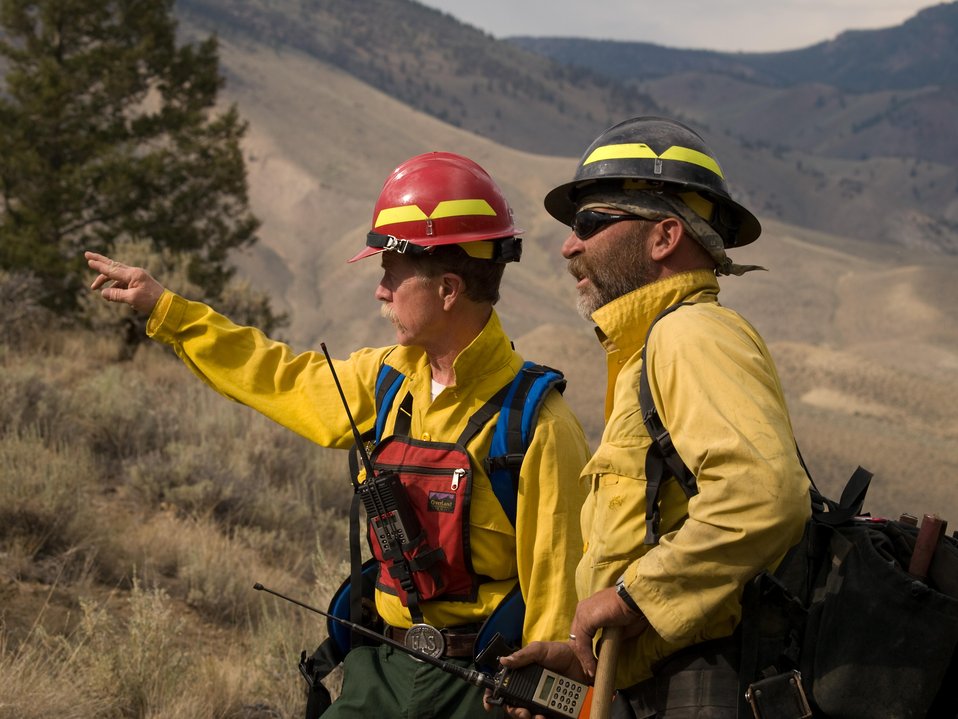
Firefighters work on the Lodgepole Fire. The Lodgepole Fire in the Salmon-Challis National Forest near Challis, ID began on Jul. 20, 2013 by lightning has consumed approximately 13,700 acres and is approximately 15% contained.